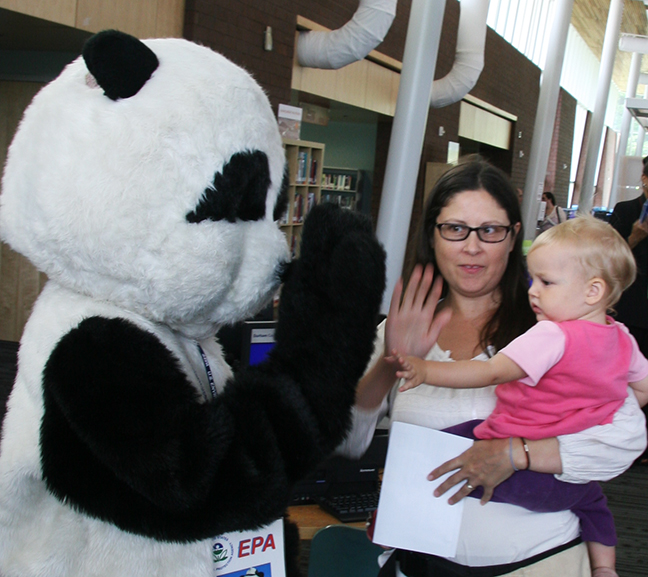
June 2013 - High-fiving Pandy Pollution, EPA’s mascot

Pandy Pollution, EPA’s mascot, showed up and interacted with children and their parents at the Village Green Project celebration to encourage air quality awareness.